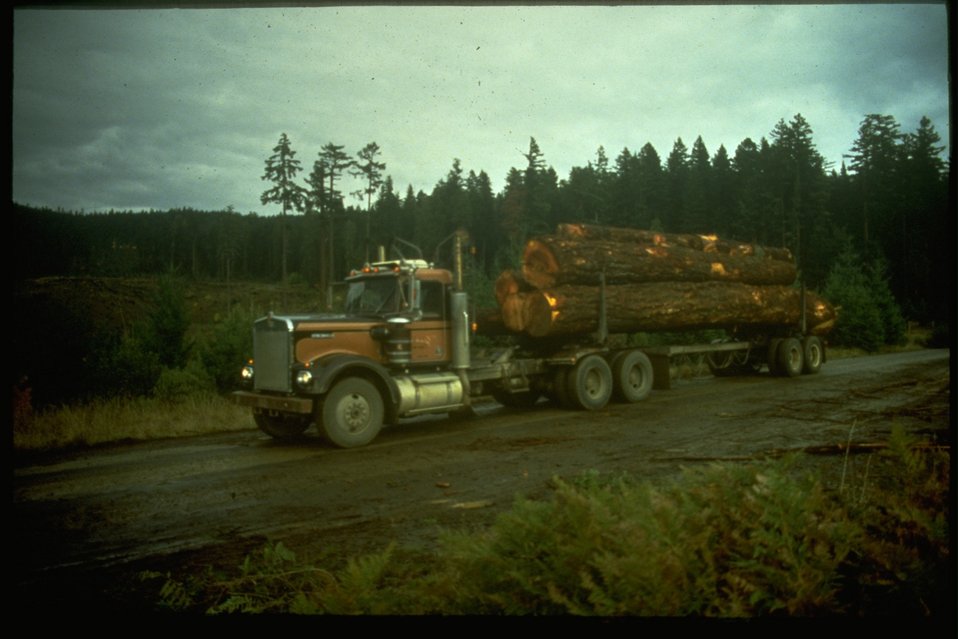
Log truck on logging road.